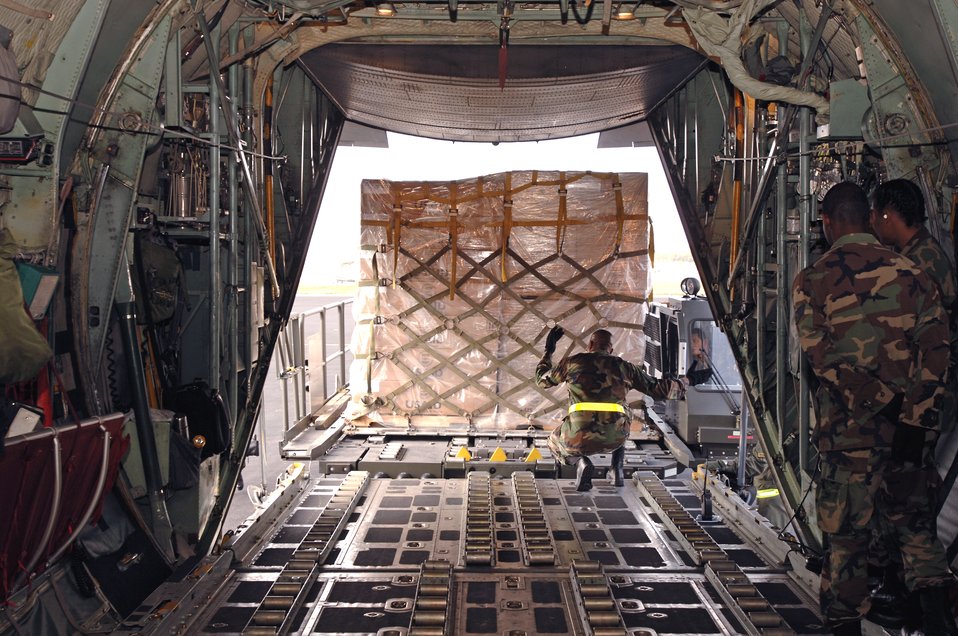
Flooded Bolivia gets humanitarian relief

Airmen load a C-130 Hercules with humanitarian supplies March 4 at Homestead Air Reserve Base, Fla. U.S. Southern Command, in cooperation with the U.S. Agency for International Development, delivered the supplies in response to devastating floods in eastern Bolivia.